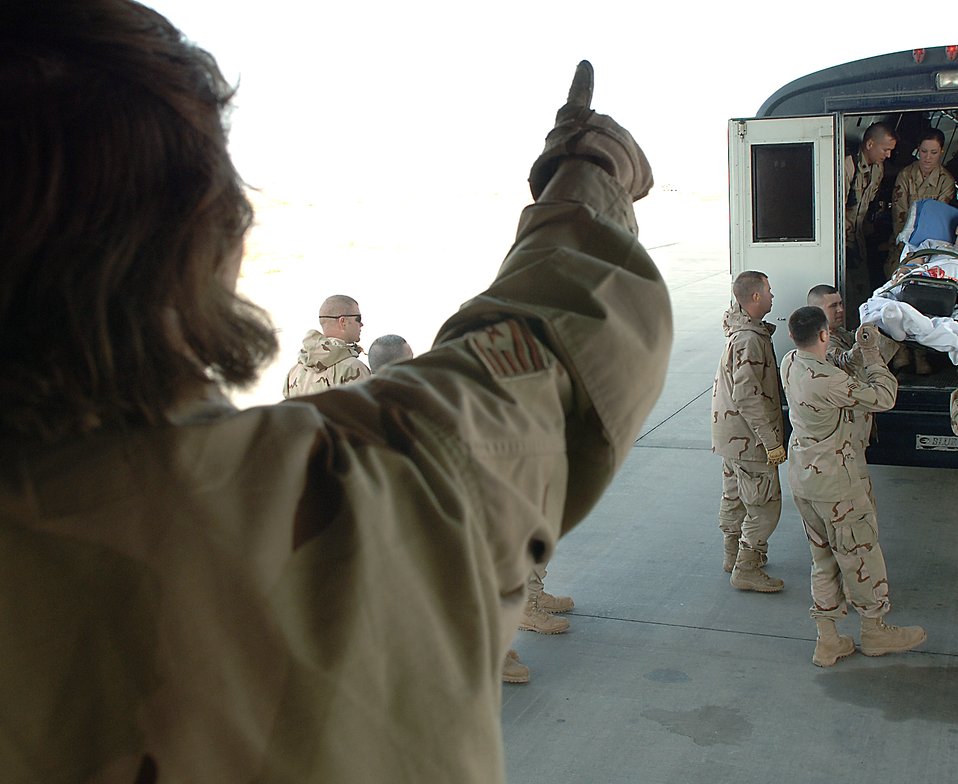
Reserve Airmen contributing to medical mission in Iraq

Air evacuation operations officer Tech. Sgt. Stacy Foster gives a thumbs-up to Airmen boarding a C-17 Globemaster III with an injured Soldier. This Soldier and others are being flown from Balad Air Base, Iraq to Landstuhl Regional Medical for further treatment for their injuries. Sergeant Foster is assigned to the 332nd Expeditionary Air Evacuation Flight. The Globemaster is from March Air Reserve Base, Calif.